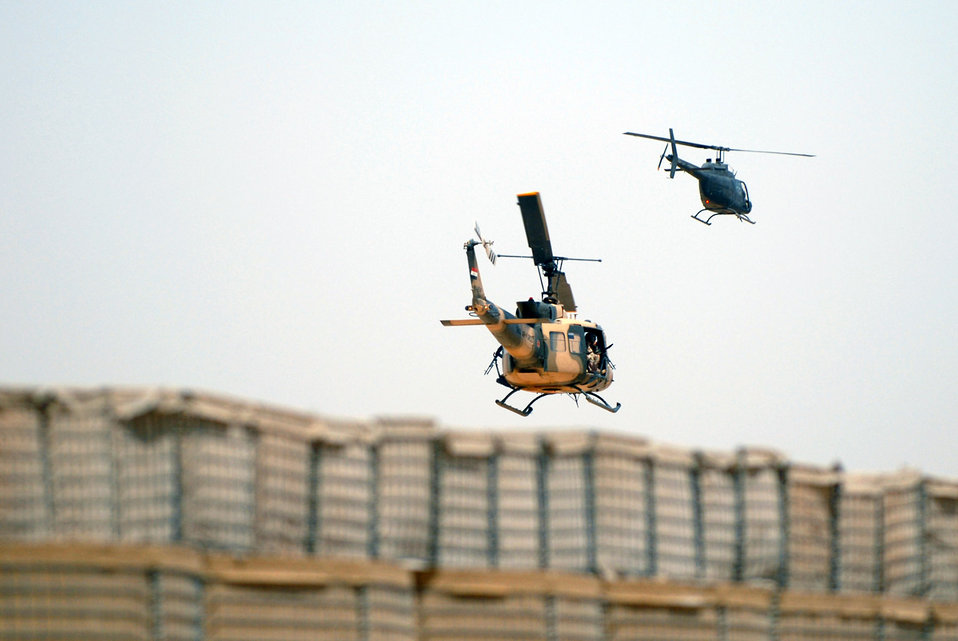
Airmen help Iraqi air force become self-sustaining service

An Iraqi air force UH-1 Huey II and a U.S. Army OH-58 Kiowa fly in formation during an aerial gunner and helicopter training mission May 28 over Camp Taji, Iraq. American Airmen assigned to the 770th Air Expeditionary Advisory Squadron teach the Iraqi aerial gunners and pilots how to carry out their missions in the sky to become a self sustaining force in their country.